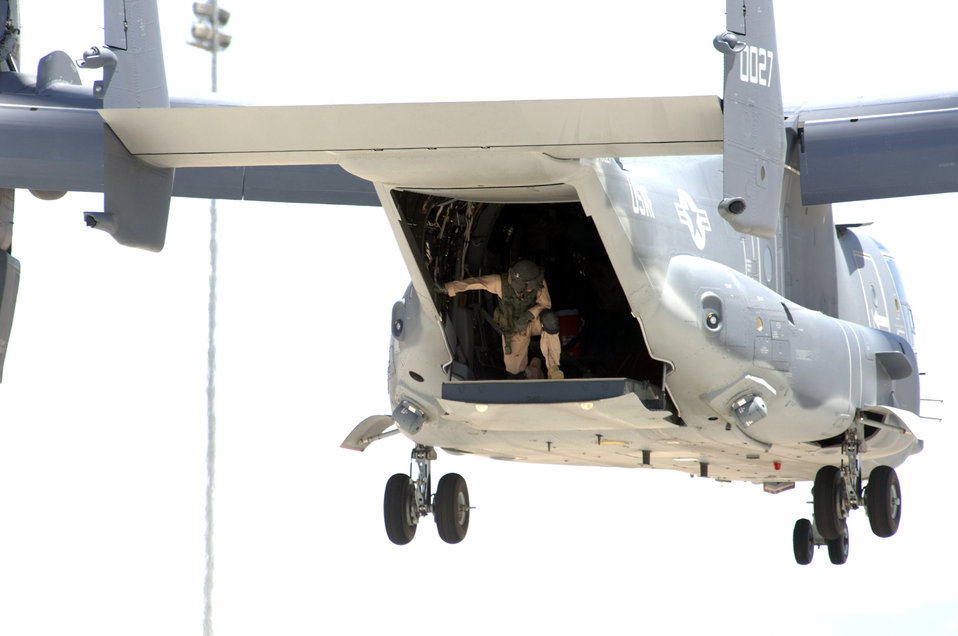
Ospreys in flight

A crewmember of an Air Force CV-22 Osprey prepares to land at Holloman Air Force Base, N.M., on May 26, 2006. The Osprey and its crew are taking part in the filming of the movie,